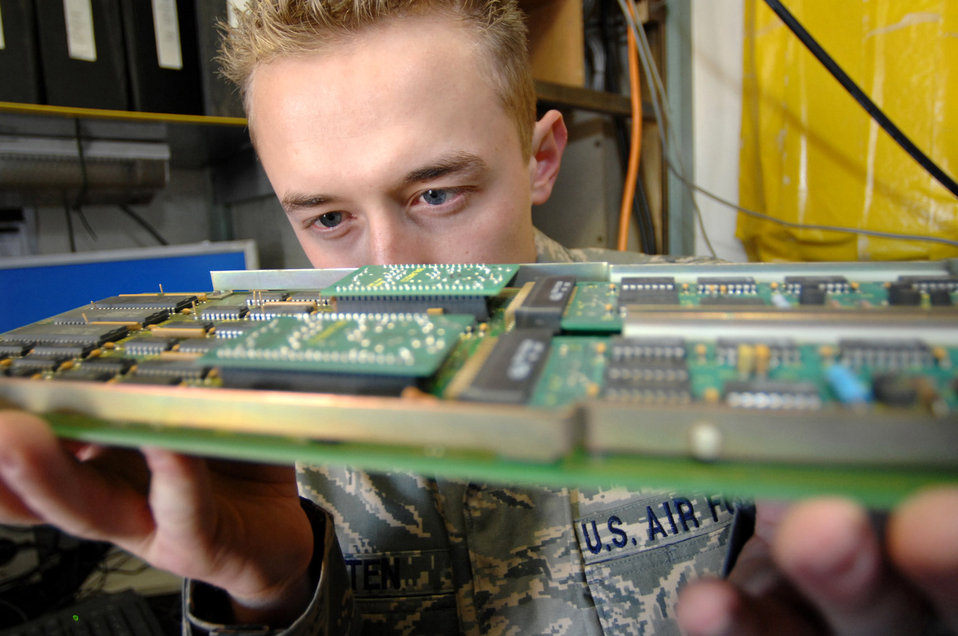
Trouble can't hide

Senior Airman Zachary Felten examines minuscule circuits on one of the circuit cards from an FCC-100 multiplexer Jan. 22 at Balad Air Base, Iraq. Each card can receive upwards of 50 signals at any moment and send them to air traffic control scopes which projects an image of the air space. No job is too small for the communications Airmen who maintain the systems that monitor combat air space here. Airman Felten is a 727th Expeditionary Air Control Squadron tech controller deployed from Eglin Air Force Base, Fla.